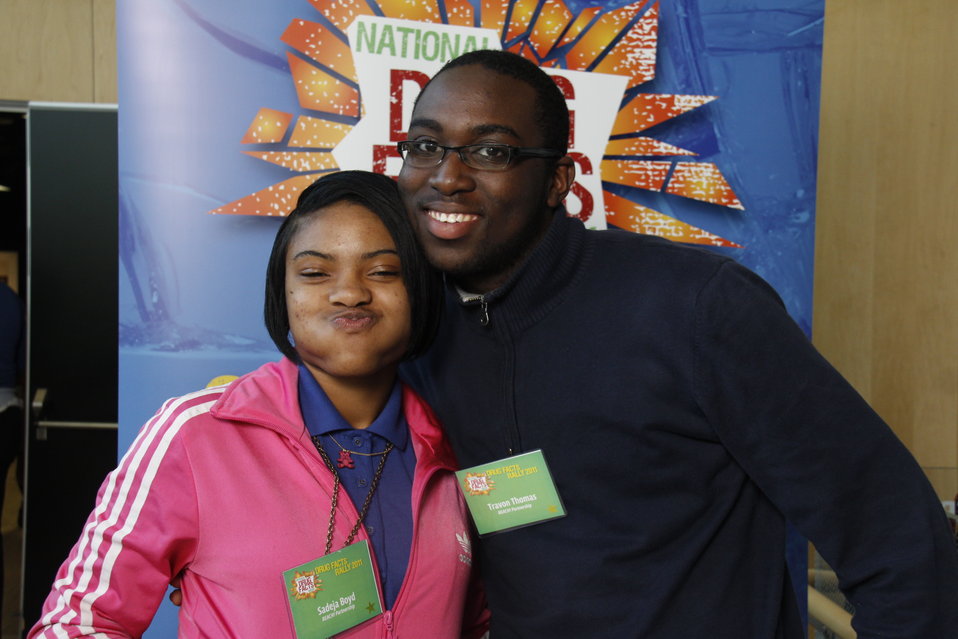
NDFW Mentor Event